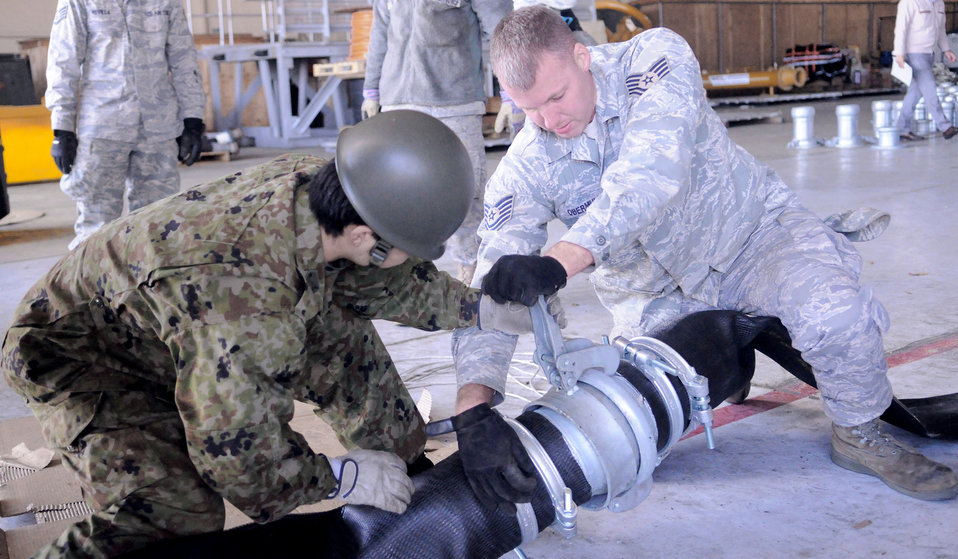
Yokota Airmen help cool power plant

Tech. Sgt. John Obermuller and a Japan Ground Self-Defense Force member join two sections of hose March 26, 2011, at Yokota Air Base, Japan. The hoses are part of water pump donated by the U.S. government to help the Japanese government stabilize the Fukushima nuclear power plant. Obermuller is assigned to the 374th Maintenance Squadron.